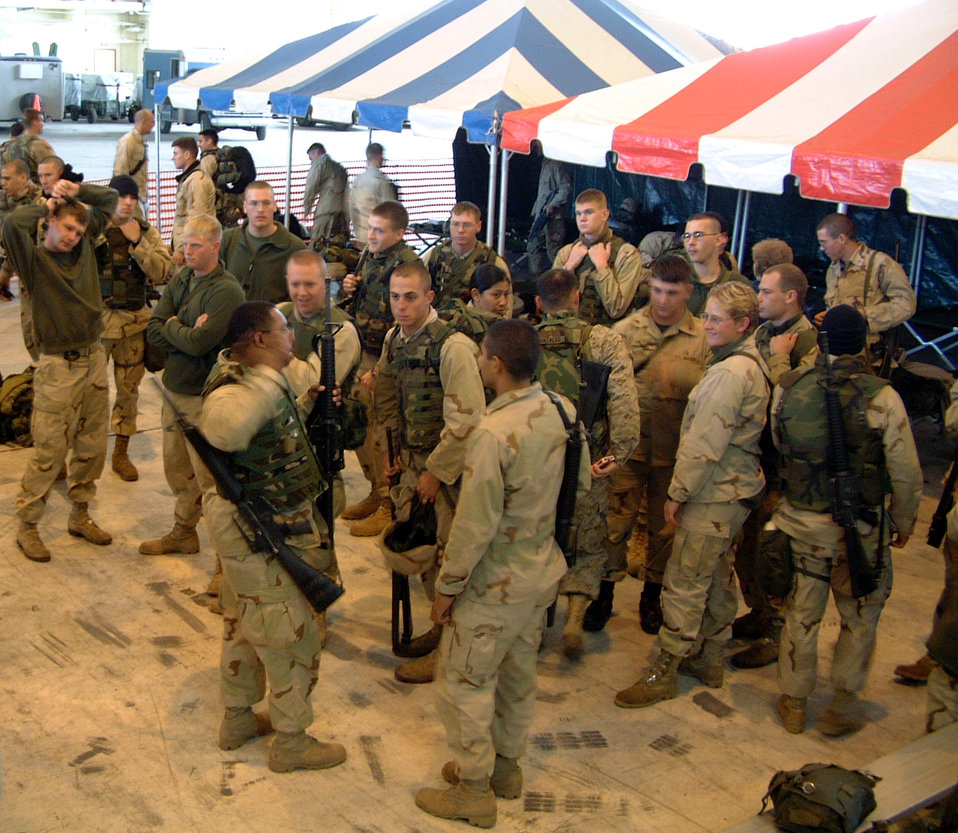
Westover bridges airlift effort to Southwest Asia

WESTOVER AIR RESERVE BASE, Mass. -- Marines wait to check in their weapons at a temporary armory at Westover Air Reserve Base, Mass. The base is a critical junction of an air bridge across the Atlantic for deploying troops and equipment.